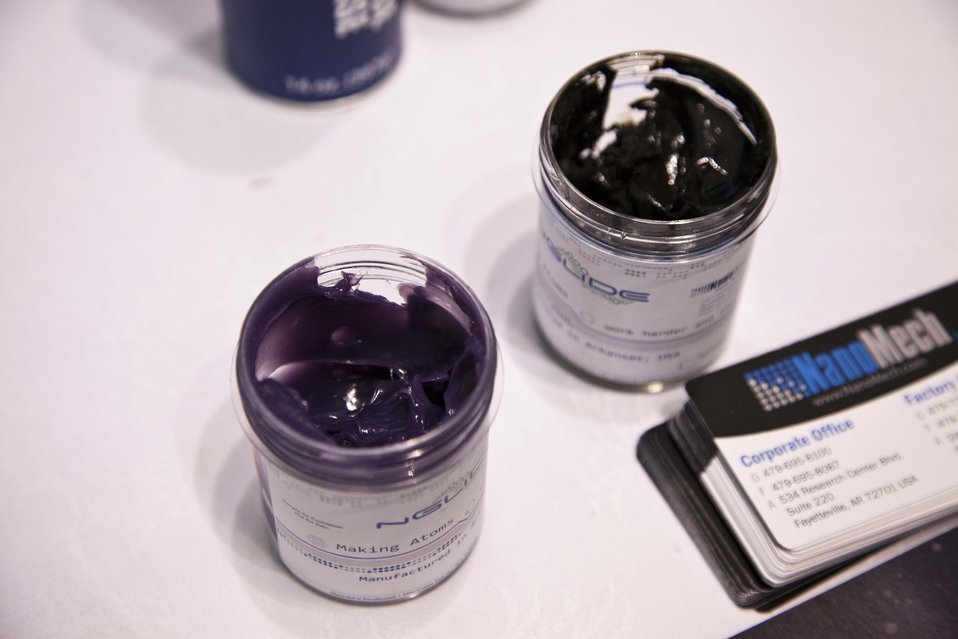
AEMC Summit

Energy production is an energy-intensive industry, but a company that makes a lubricant using nano science is hoping to change that. Supported by an Energy Department grant, NanoMech's TuffTek is a kind of motor oil designed to reduce friction during energy production -- a step that would increase energy efficiency and reduce the wear and tear on mechanical parts.